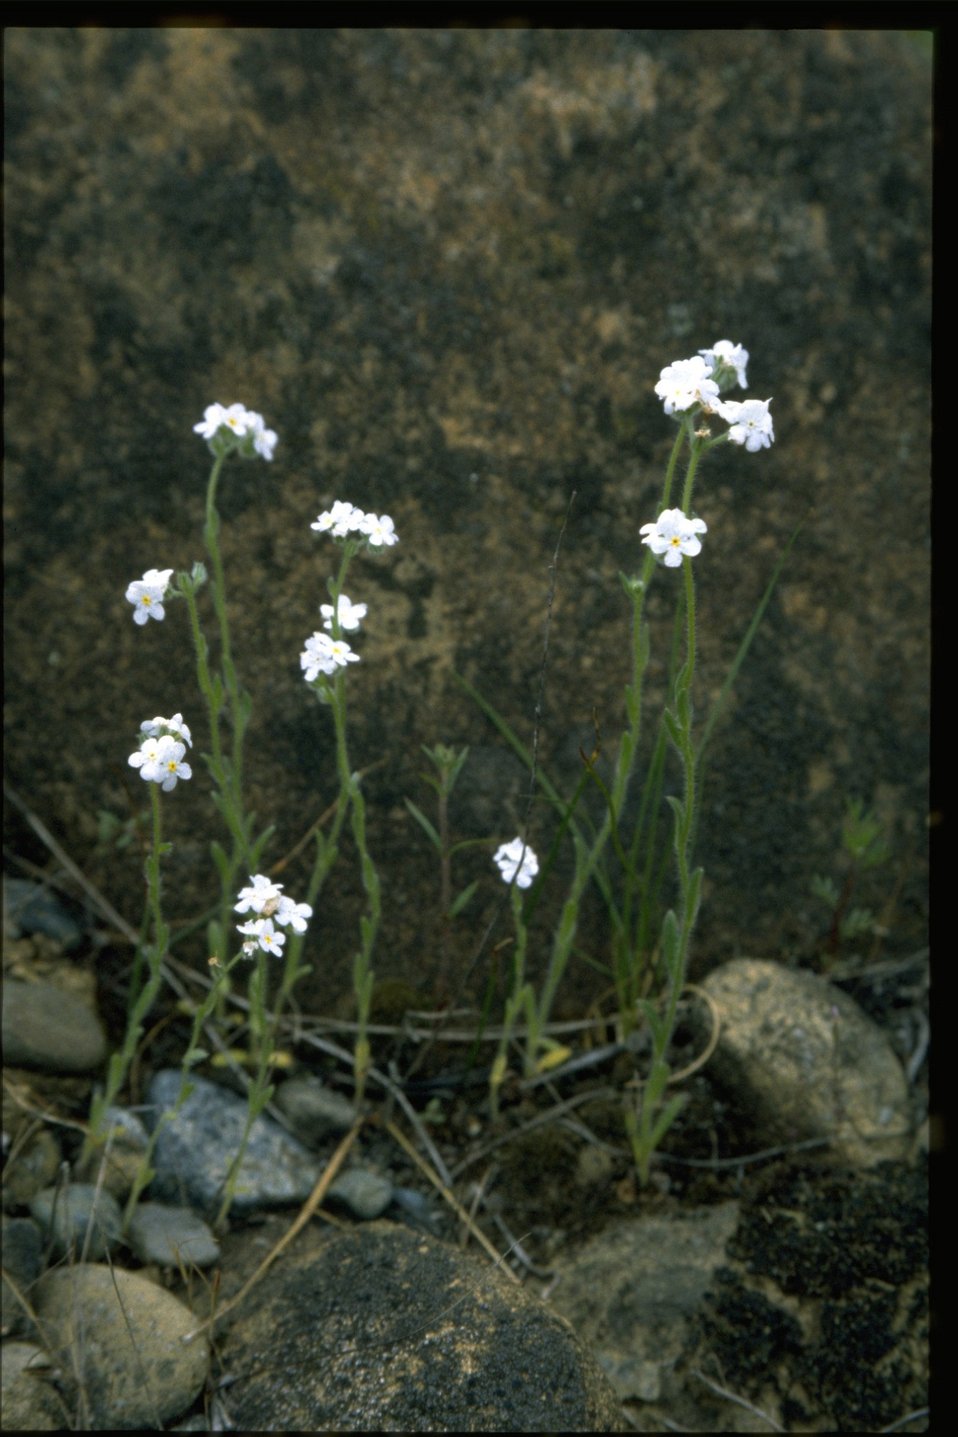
Farshot of Plagiobothrys.